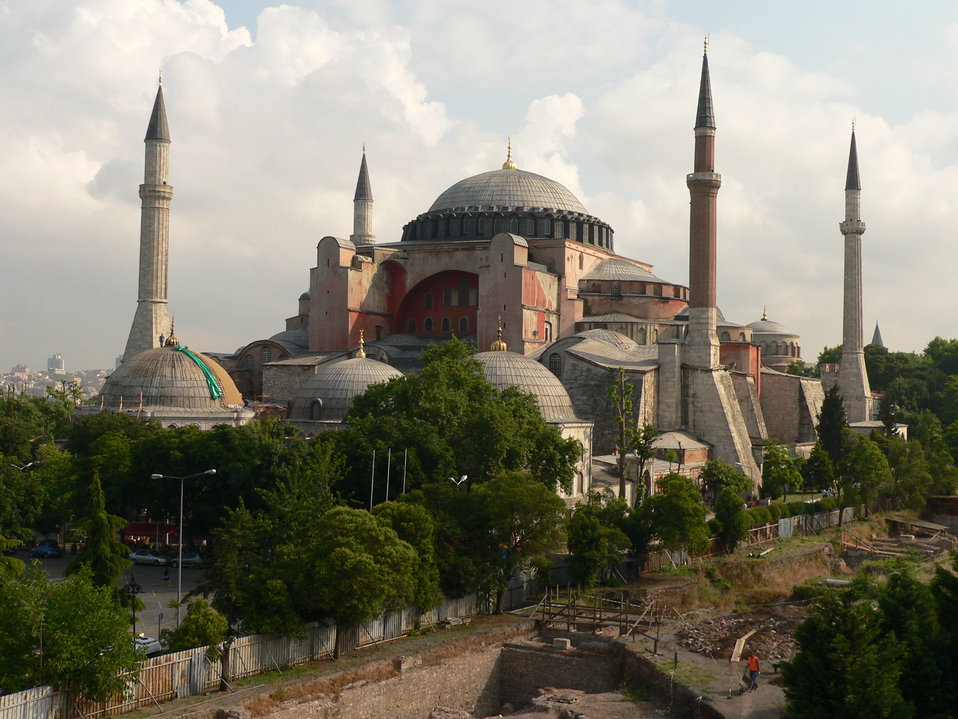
I took this in Istanbul in June 2006. It shows the Hagia Sophia Cathedral, built by Emperor Justinian in the 6th century AD. Today it is open to the public as a museum. In the foreground, excavations are taking place.